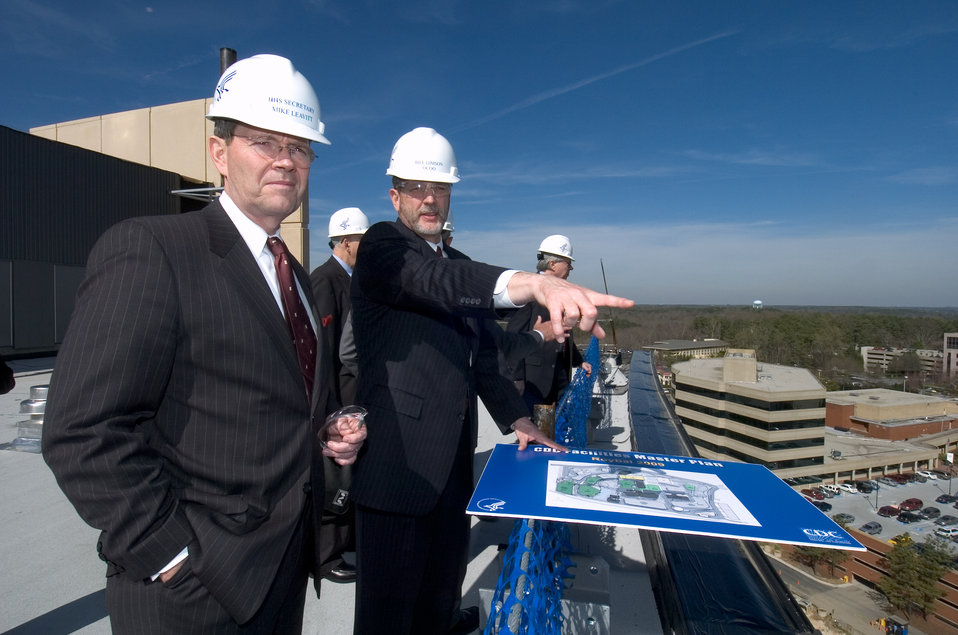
This 2005 photograph showed Bill Gimson (right), the CDC's Chief Operating Officer, pointing out future facility developments at the Clifton Road, Roybal campus, located in Atlanta, Georgia, to Michael O. Leavitt, the Secretary of Health and Human Services.